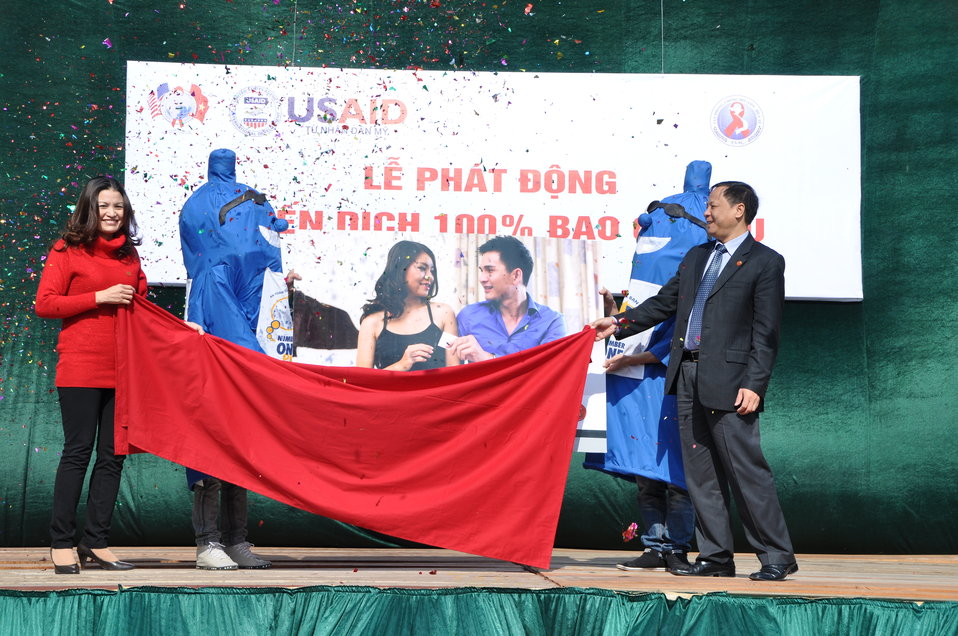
100% Condom Use Campaign Launch, Dec. 2, 2011